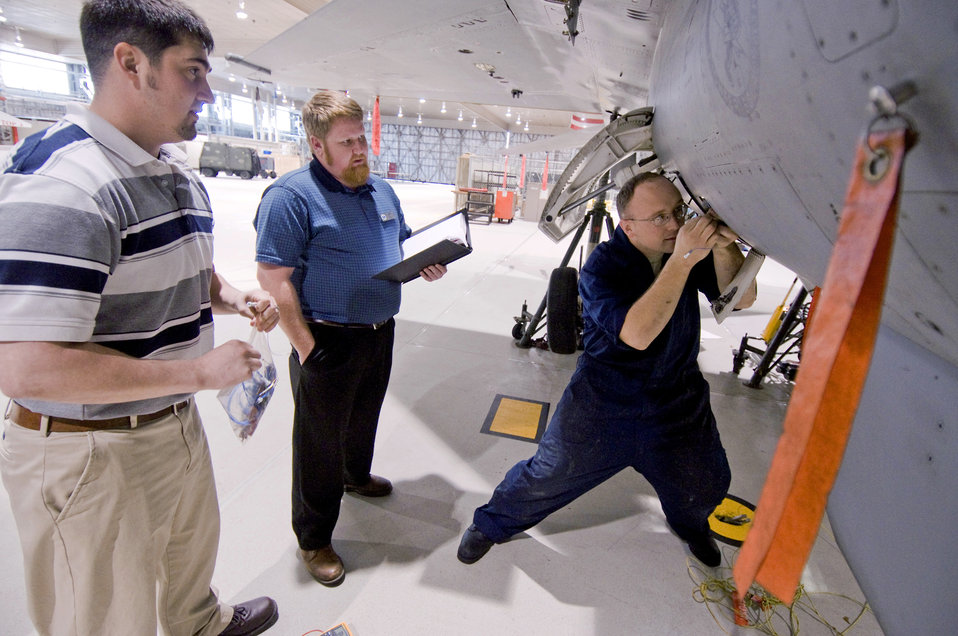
Misawa maintainers keep F-16s flying

Staff Sgt. Jack Williams fixes an exhaust gas temperature harness on a jet fuel starter while Robert Farnsworth and Richard Holmes provide over-the-shoulder assistance April 5, 2010, at Misawa Air Base, Japan. Sergeant Williams is a 35th Aircraft Maintenance Squadron phase technician and Mr. Farnsworh and Mr. Williams are Air Force Engineering and Technical Services technicians.